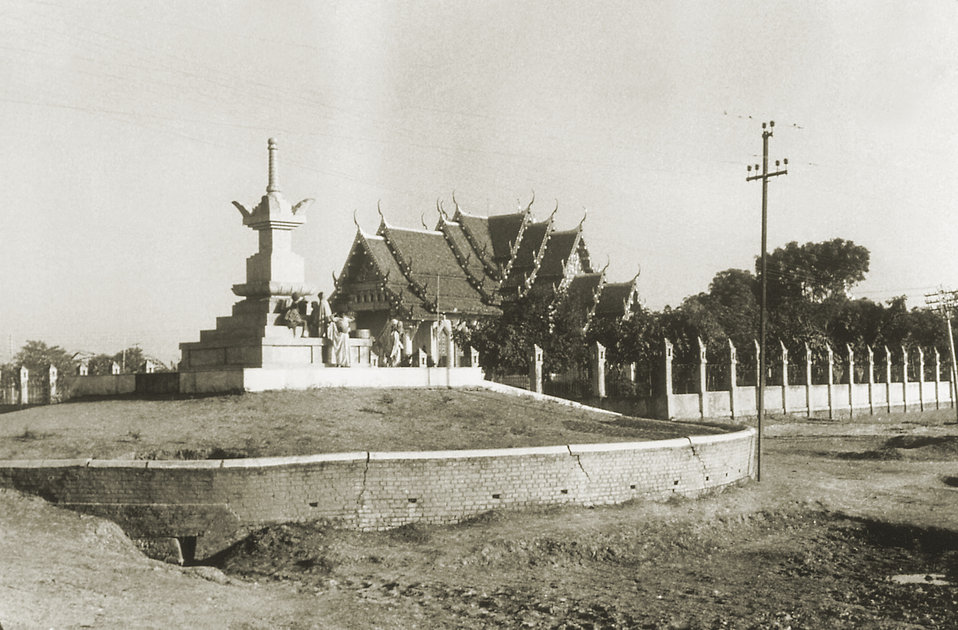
This 1975 image depicts the exterior of the Thai Buddhist temple located in the Bodh Gaya, or the holy pilgrimage site, in the Gaya district inside the Indian State of Bihar.